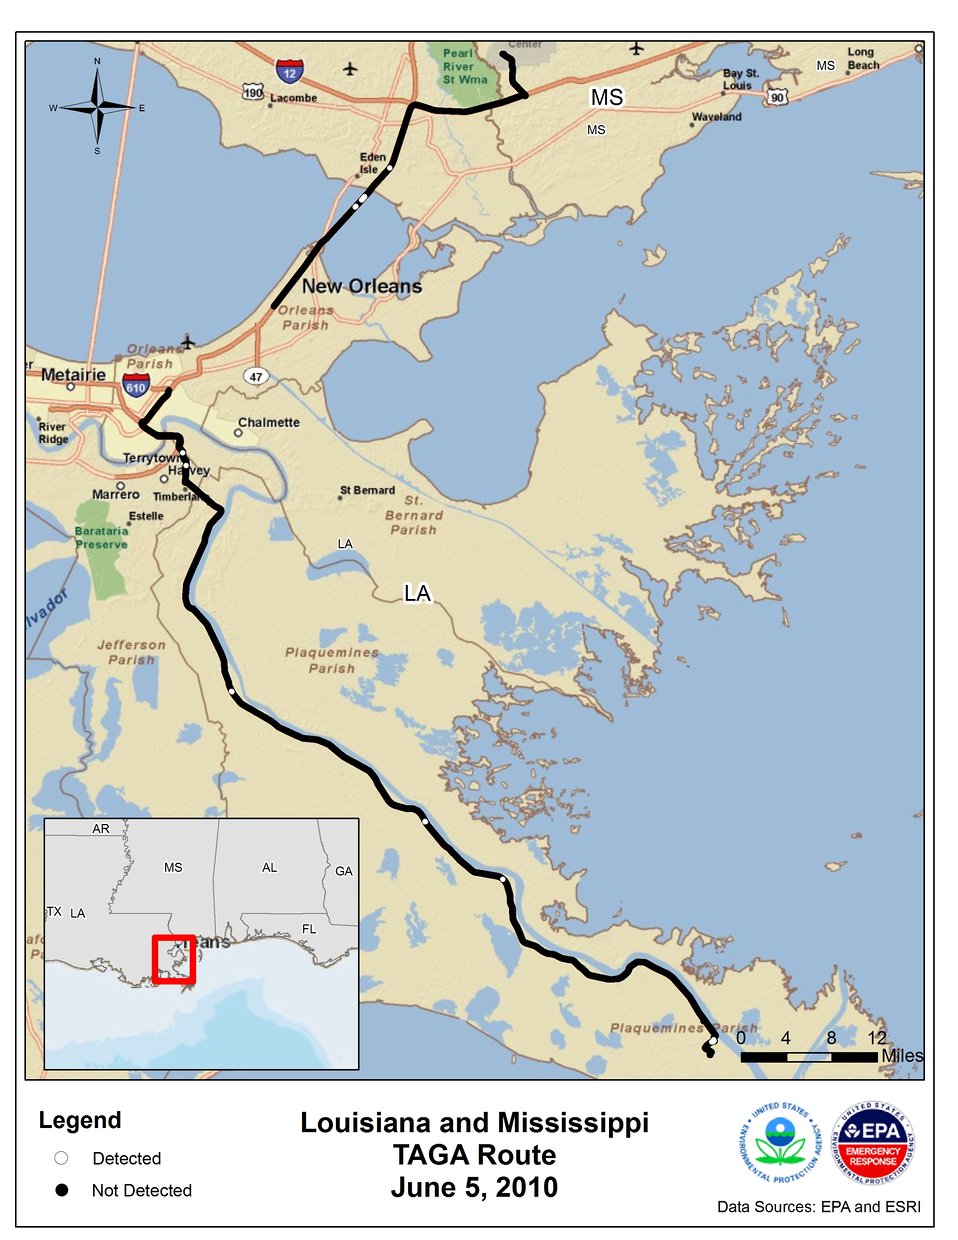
EPA TAGA Air Monitoring Locations June 5, 2010